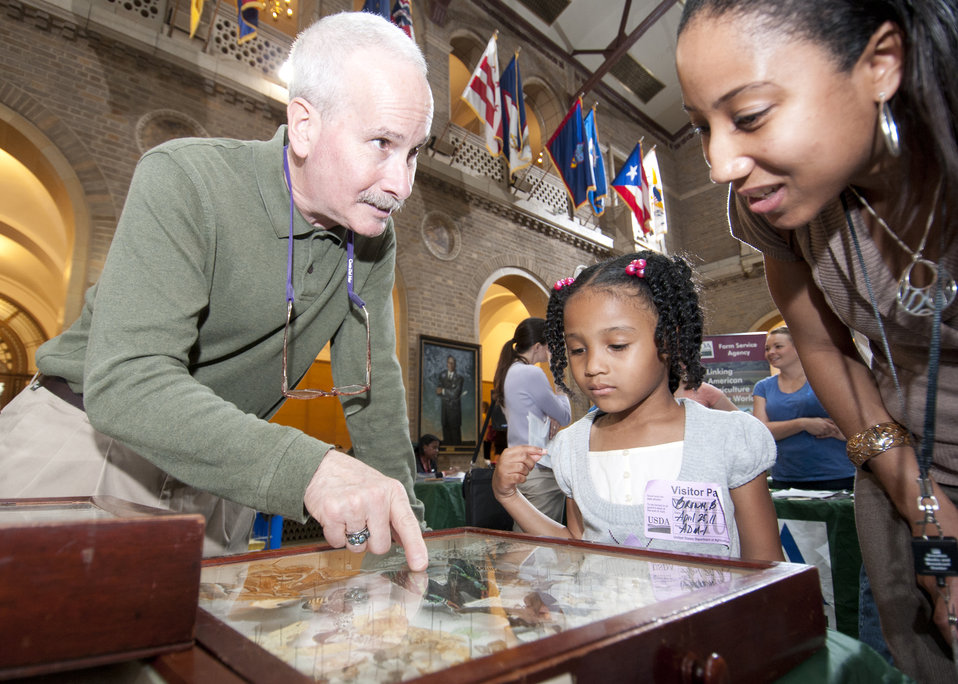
The U. S. Department of Agriculture (USDA) held its annual “Take Your Child to Work Day” on the patio of the Whitten Building, in Washington, DC, on Thursday, Apr. 28, 2011. The program is designed to introduce young people to USDA’s wide range of responsibilities and services. Branaya Brown and her mother Bernetta Reese examine butterflies at the Agricultural Research Service exhibit at Agriculture’s “Take Your Child to Work Day” event.